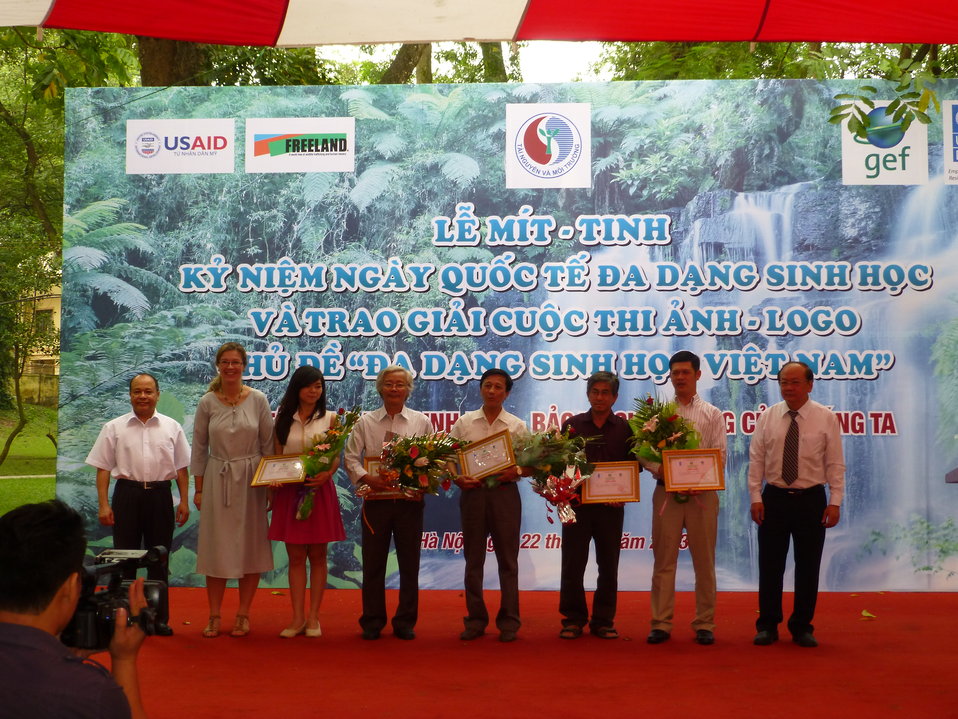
USAID Supports International Day for Biological Diversity in Hanoi